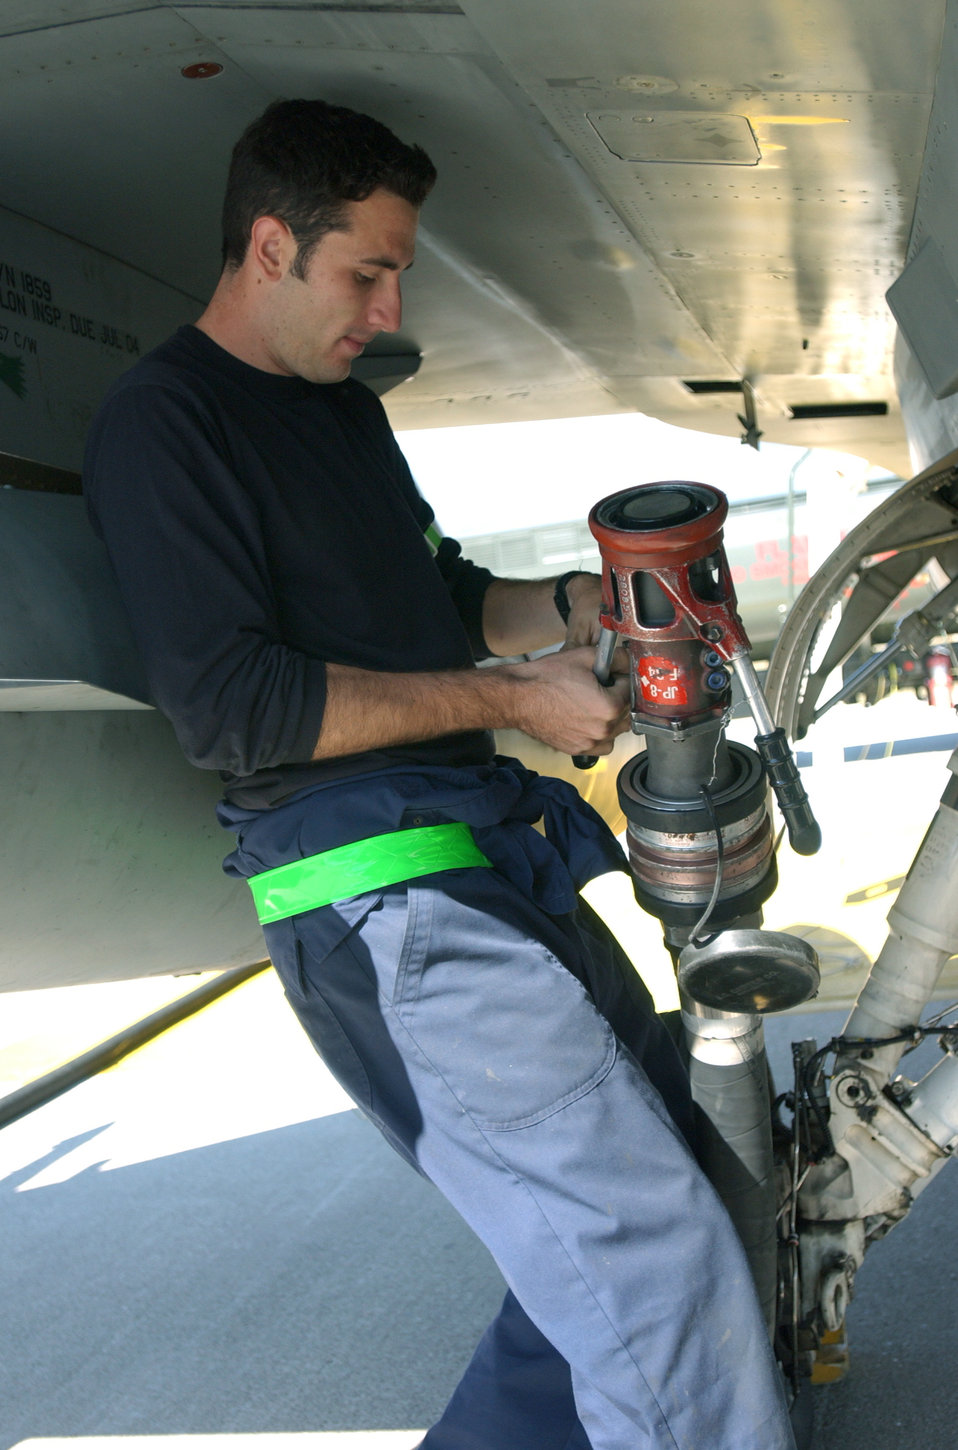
Golden Drum

AVIANO AIR BASE, Italy -- Airman 1st Class Joey Delatorre refuels an F-16 Fighting Falcon while competing for the Golden Drum award here Sept. 27. Airman Delatorre is a crew chief assigned to the 31st Aircraft Maintenance Squadron.